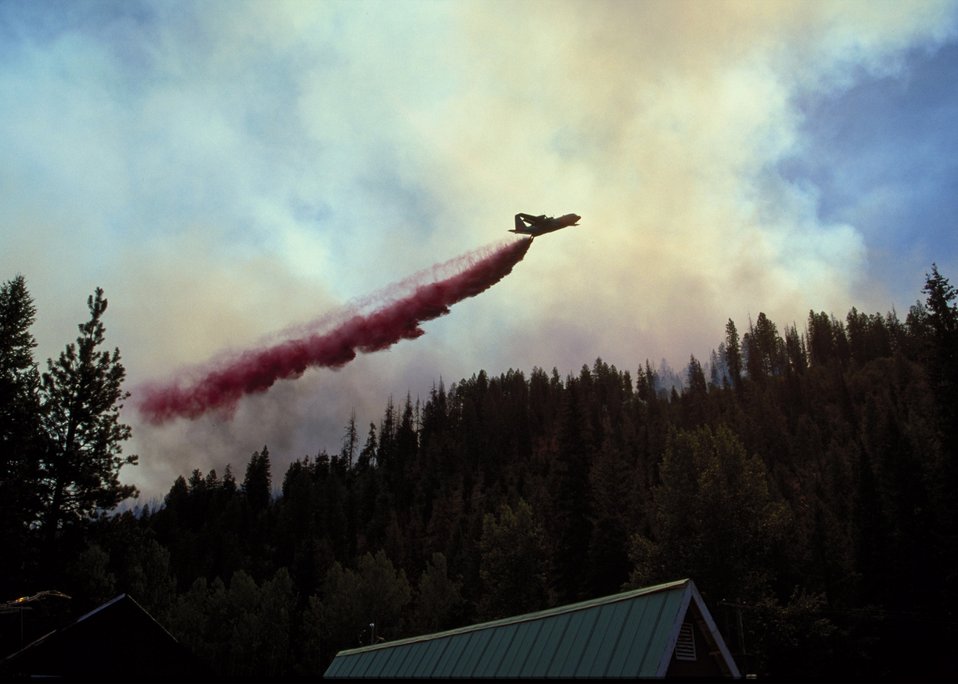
Retardant tanker Fire Season 2000 Lower Snake River District LSRD